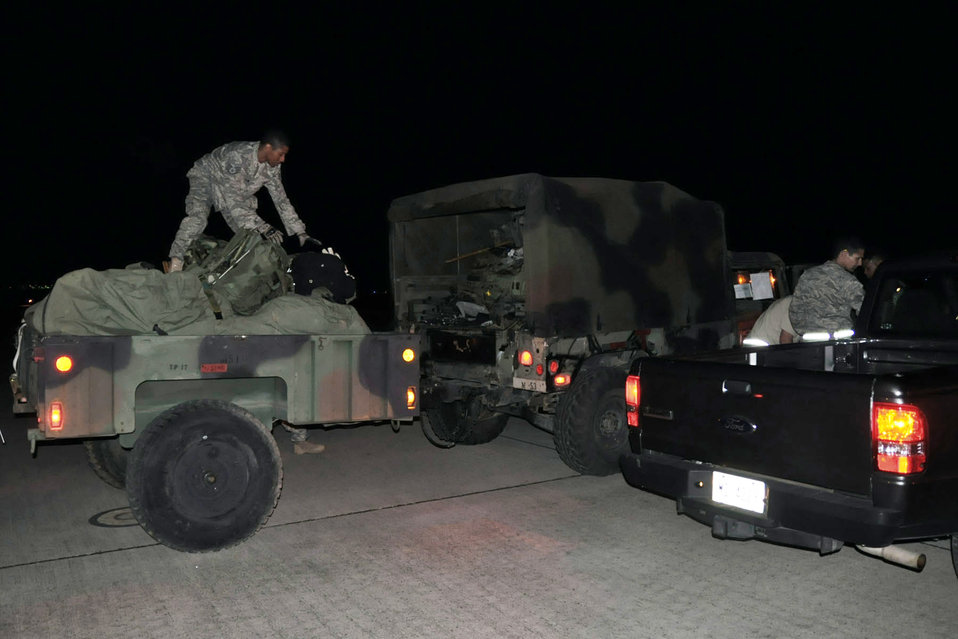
Medical mission to Haiti

Airmen load rucksacks onto a trailer attached to a Humvee on the cargo ramp at Soto Cano Air Base, Honduras, Jan. 17, 2010. The vehicle, along with a group of U.S. military medical people and supplies, are bound for Port-au-Prince, Haiti, as part of the relief effort to aid the stricken island nation. The Air Force Reserve Command's 910th Airlift Wing has three aircraft, crews of more than 30 people flying relief effort missions and many Citizen Airmen working at Youngstown Air Reserve Station, Ohio, to provide home station support to the crews.